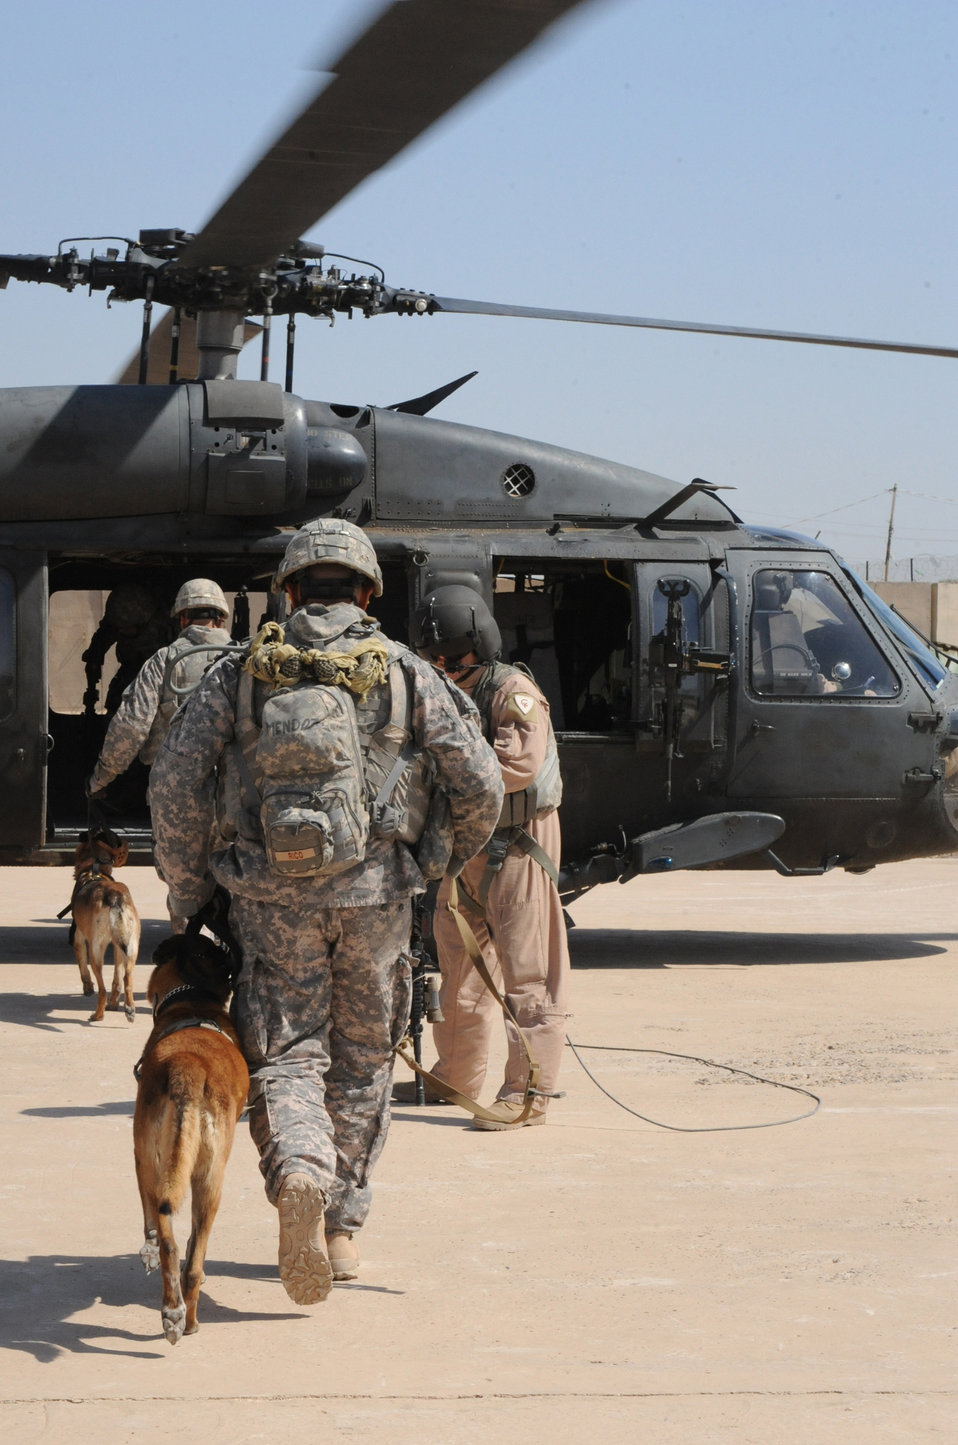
Man's best friend

Military working dog handlers from the 332nd Security Forces Group board a helicopter with their military working dogs during training April 21 at Joint Base Balad, Iraq. The training teaches the handlers and military working dogs how to safely and properly enter and exit aircraft, and prepares them for future air-assault missions.